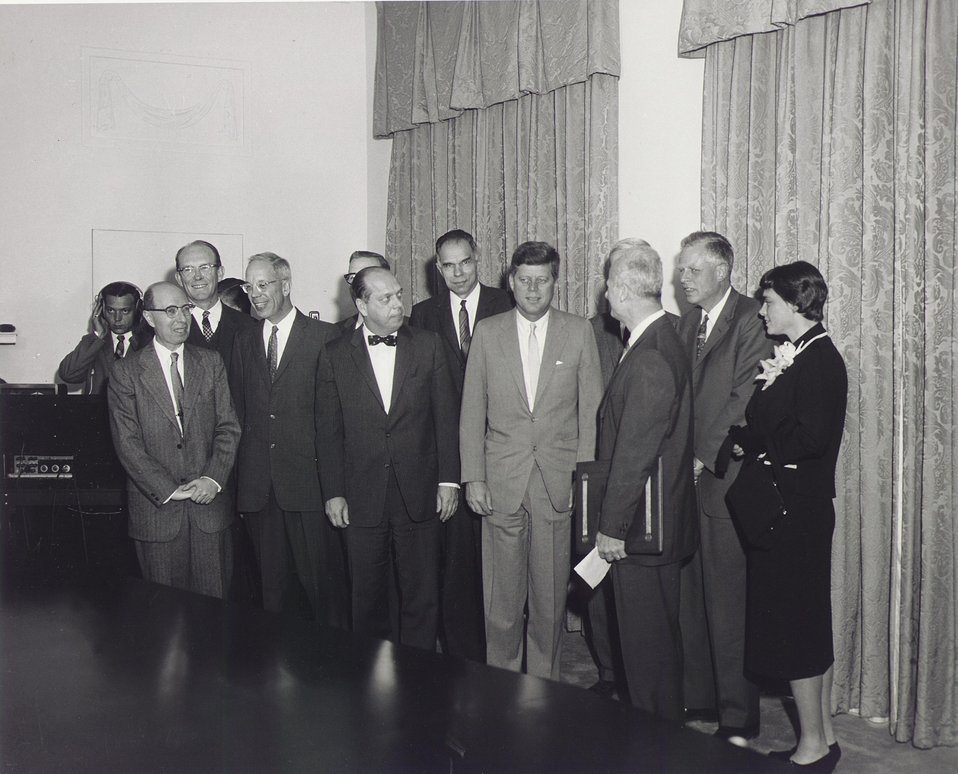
Fermi Award Ceremony for Dr. Bethe in Washington on Dec. 1, 1961.